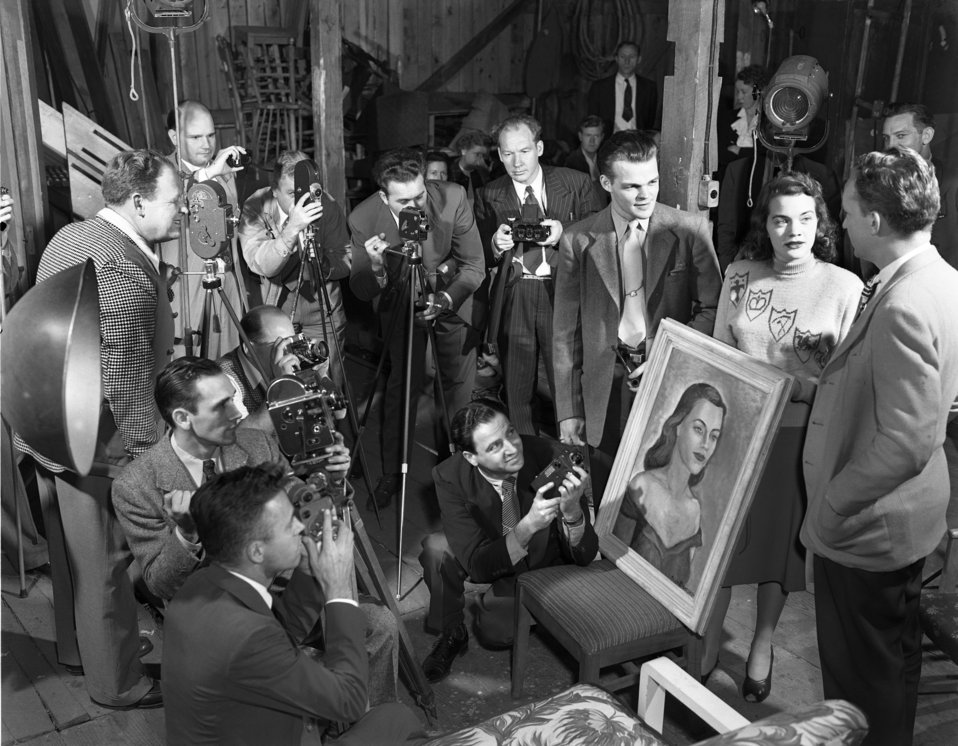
Cinema Club and Community Playhouse 'Laura' Oak Ridge 1947

3415-2 DOE photo Ed Westcott 4-18-1947 Oak Ridge Tennessee